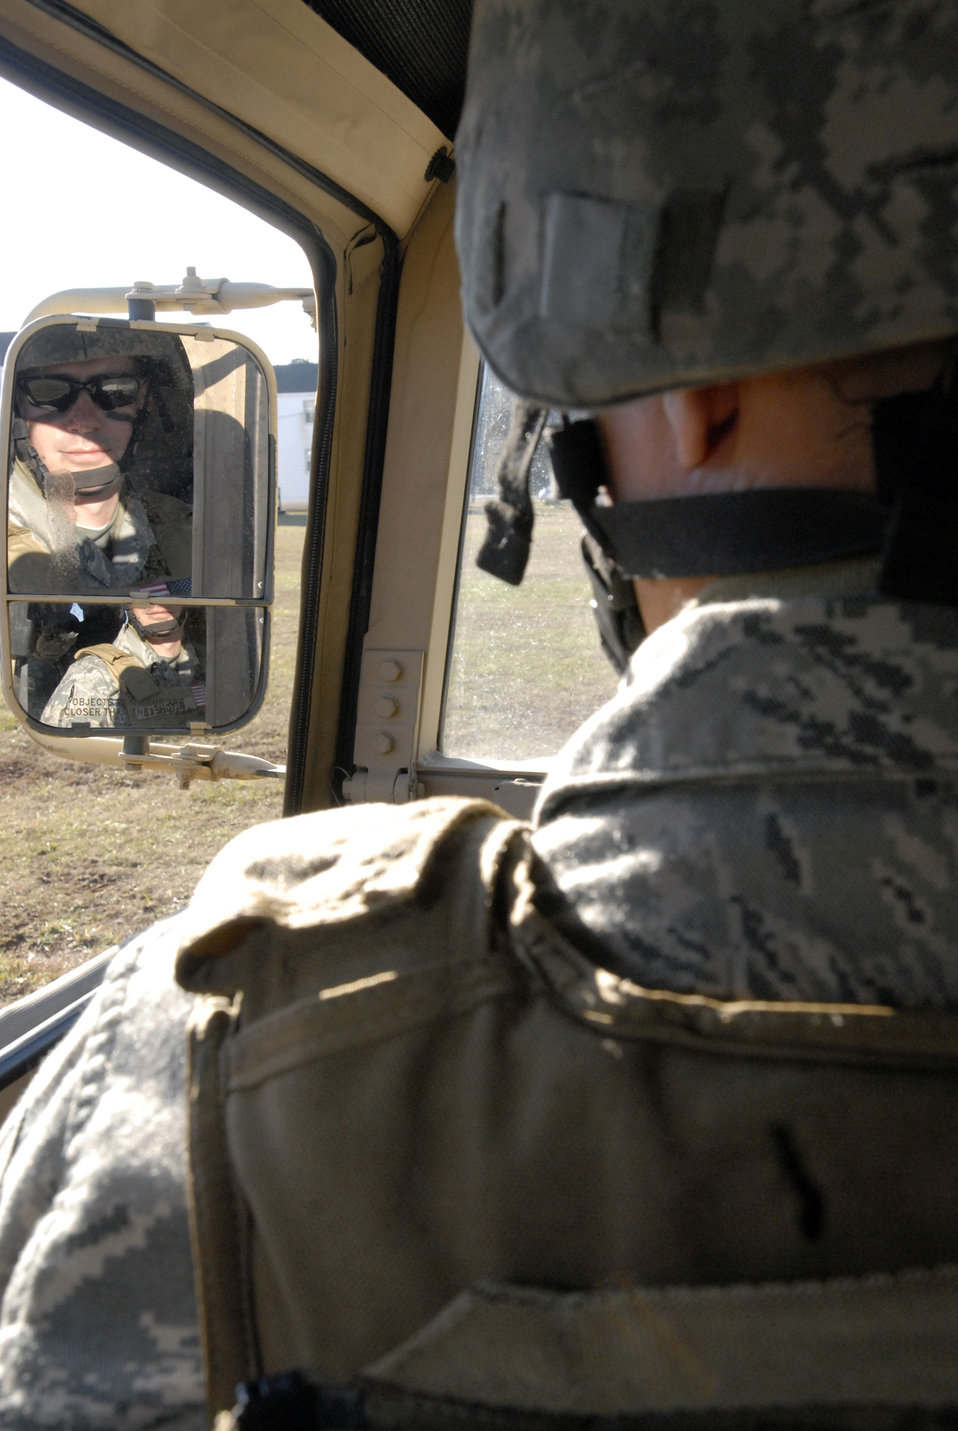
Patriot exercise teaches ISR skills to enhance situational awareness

Tech. Sgt. Brad Mitchellpeers into the rear view mirror of a Humvee as he begins a reconnaissance exercise Dec. 10, 2009, at Fort Pickett, Va. The training was part of Patriot 7, a week-long exercise using intelligence,
surveillance and reconnaissance to support irregular warfare missions. Sergeant Mitchell is a 342nd Training Squadron Basic Combat Convoy Course instructor.